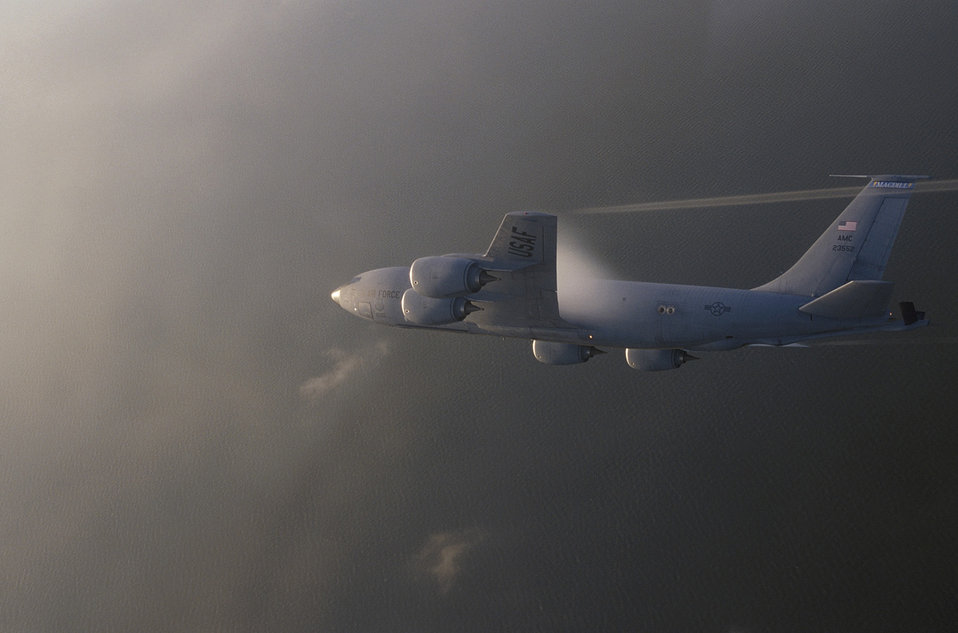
A flight in the clouds

A KC-135R Stratotanker Cuts through the clouds on a training mission. The KC-135's principal mission is air refueling. This asset greatly enhances the U. S. Air Force's capability to accomplish its mission of Global Engagement. It also provides aerial refueling support to U.S. Navy, U.S. Marine Corps and allied aircraft. Four turbofans, mounted under 35-degree swept wings, power the KC-135 to takeoffs at gross weights up to 322,500 pounds. Nearly all internal fuel can be pumped through the tanker's flying boom, the KC-135's primary fuel transfer method. A special shuttlecock-shaped drogue, attached to and trailed behind the flying boom, may be used to refuel aircraft fitted with probes.